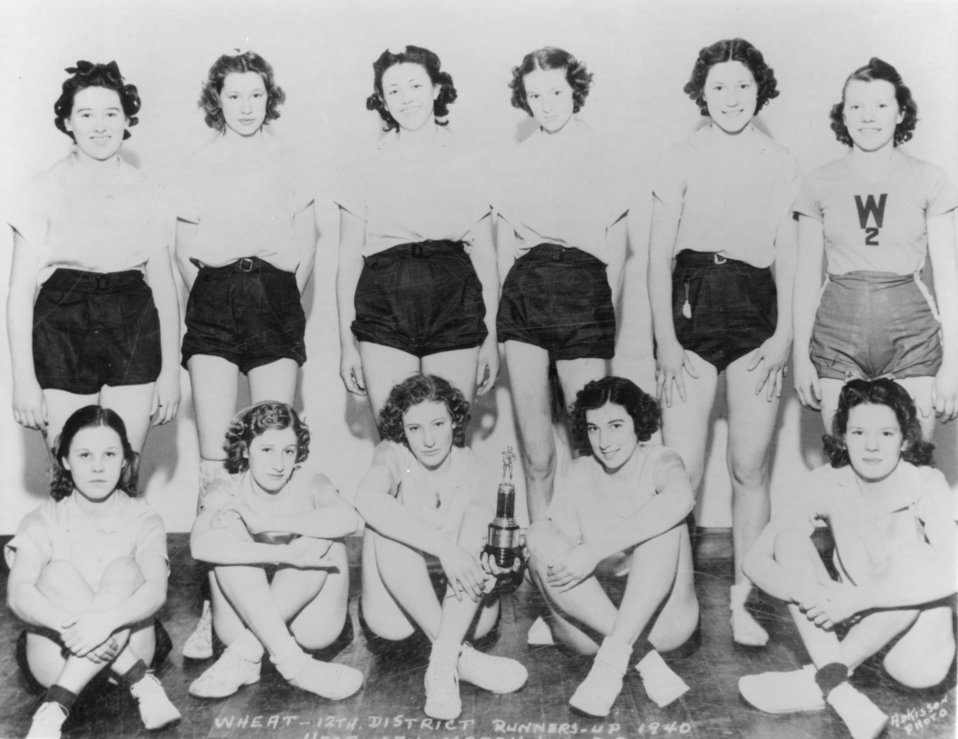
Early settlers at Oak Ridge